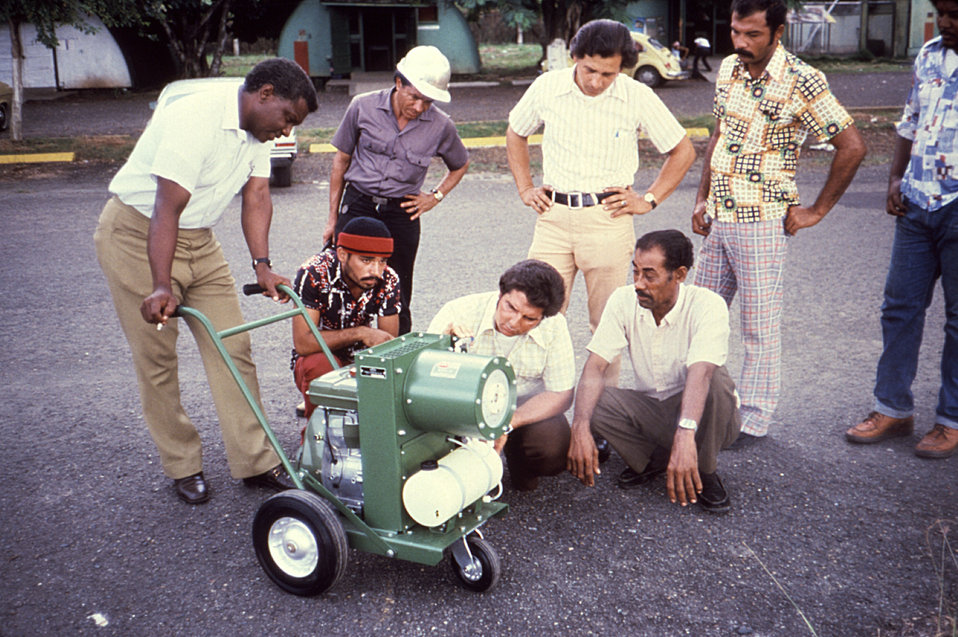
These field technicians are examining a Leco Mini-IITM ultra-low volume (ULV) portable fog generator used in the control of disease vectors, not only in outdoor settings, but indoor settings as well.